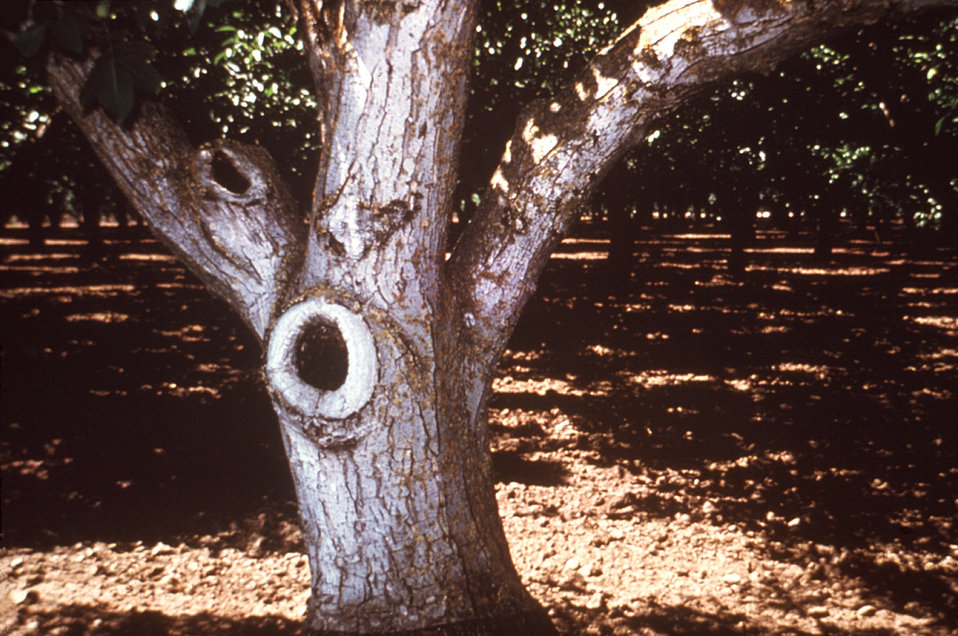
This 1981 photograph depicted a hollowed-out tree hole, which was an ideal breeding place for mosquitoes, given its ability to retain water in a shady, dark environment.